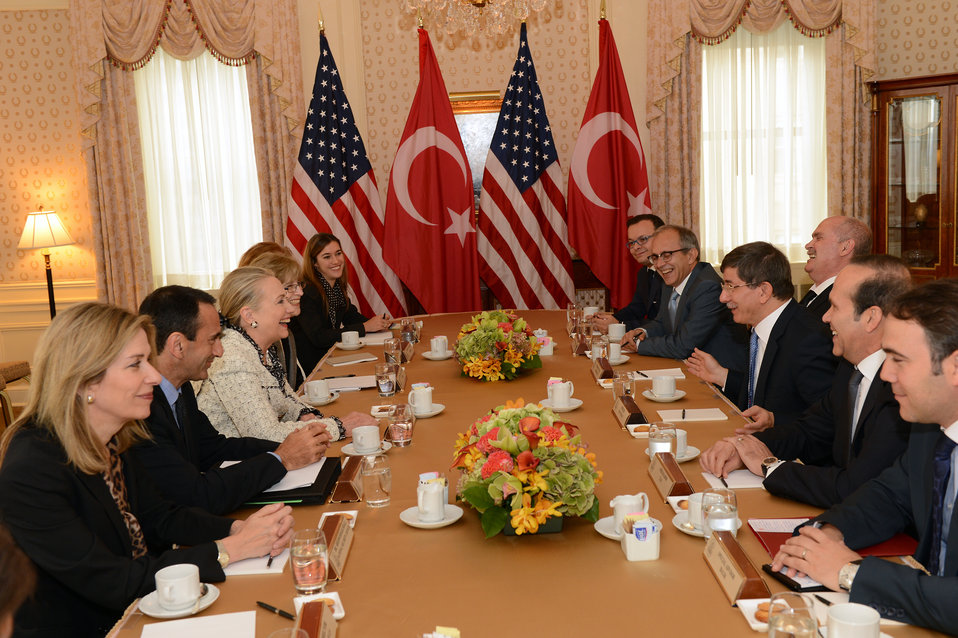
Secretary Clinton Meets With Foreign Minister of Turkey Davutoglu

U.S. Secretary of State Hillary Rodham Clinton meets with Foreign Minister of Turkey Ahmet Davutoglu in New York, New York on September 26, 2012.